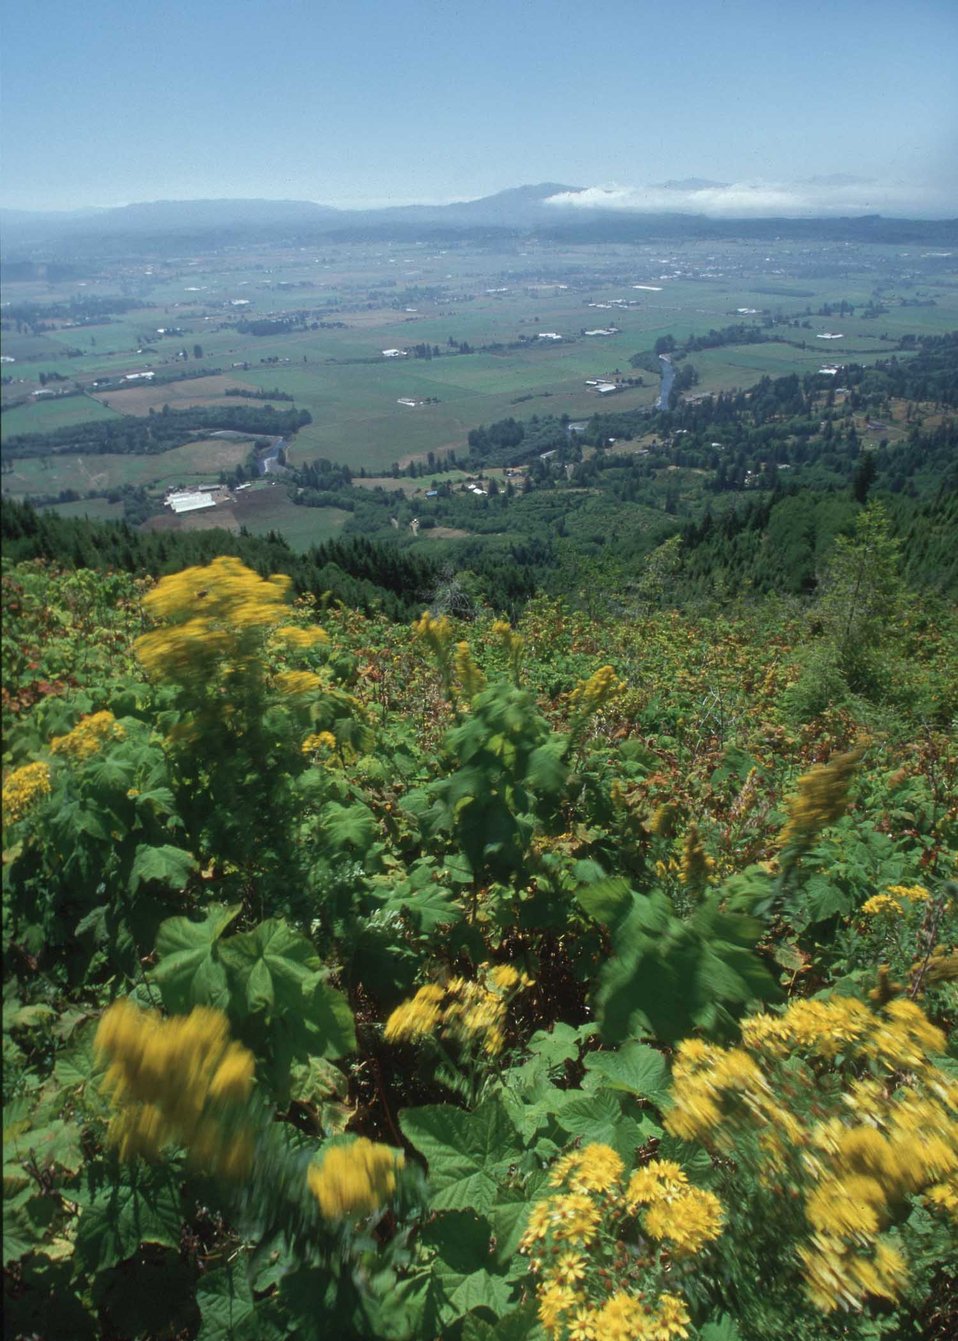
overview of Tillamook watershed, Tillamook, Oregon.